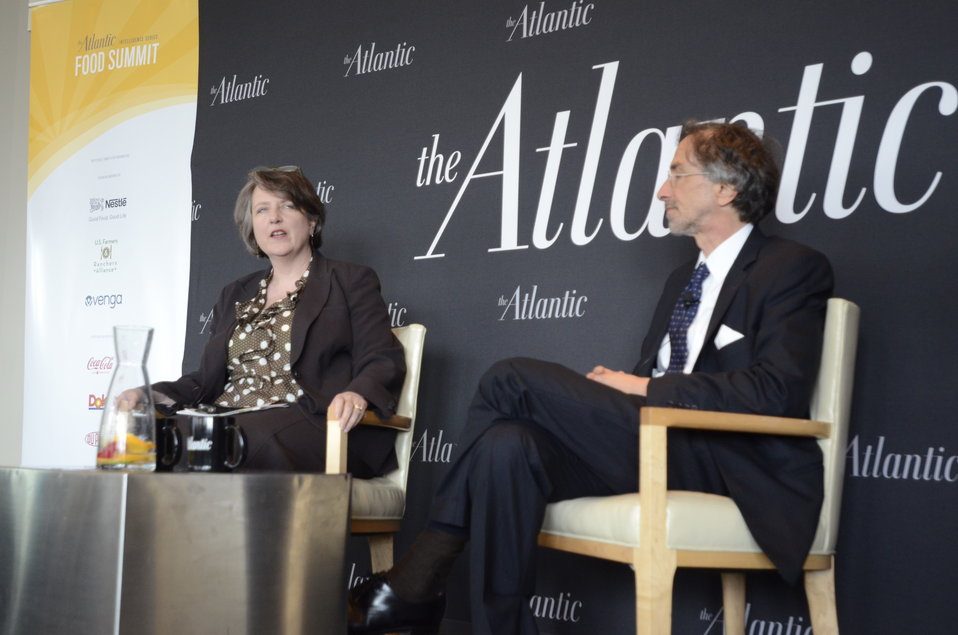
The Atlantic Senior Editor Corby Kummer interviews Agriculture Deputy Secretary Kathleen Merrigan at the 3rd Annual Food Summit held at the W Hotel in Washington, D.C. on Thursday, May 24, 2012. The Food Summit event includes interviews, panel discussions and symposia with leading authorities on issues related to food, food security, and nutrition.